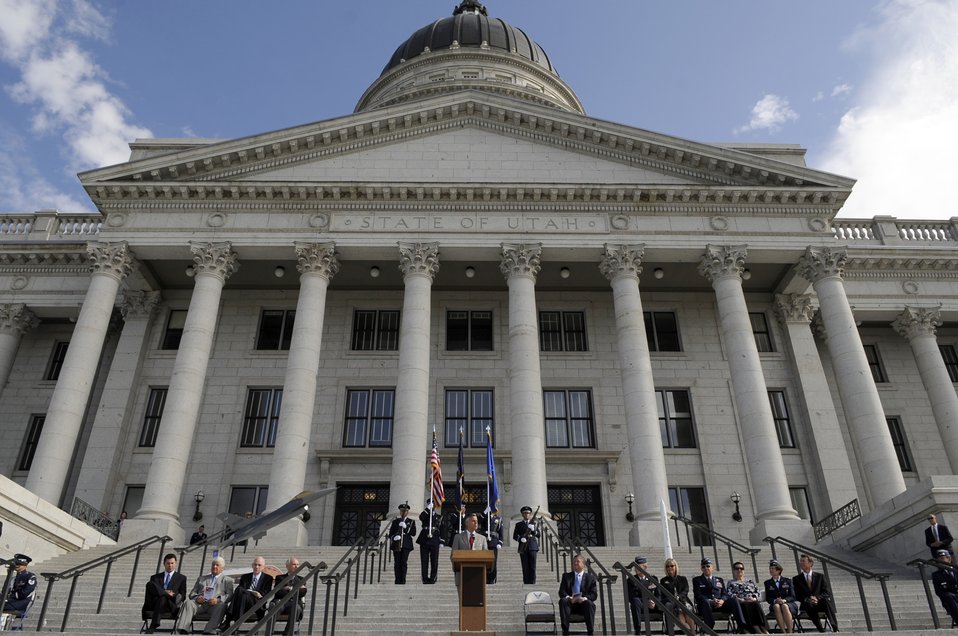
Air Force Week - Salt Lake City kicks off

Gov. Jon Huntsman, Jr. speaks during the proclamation ceremony for Air Force Week-Salt Lake City Jun. 1 at the Salt Lake City Captiol building. The ceremony included performances by the Air Force Academy Band, Bolling Air Force Base Drill Team and a 4-ship flyover the capitol building. Air Force Week-Salt Lake City is Jun. 1 to 7 and has events throughout the area.